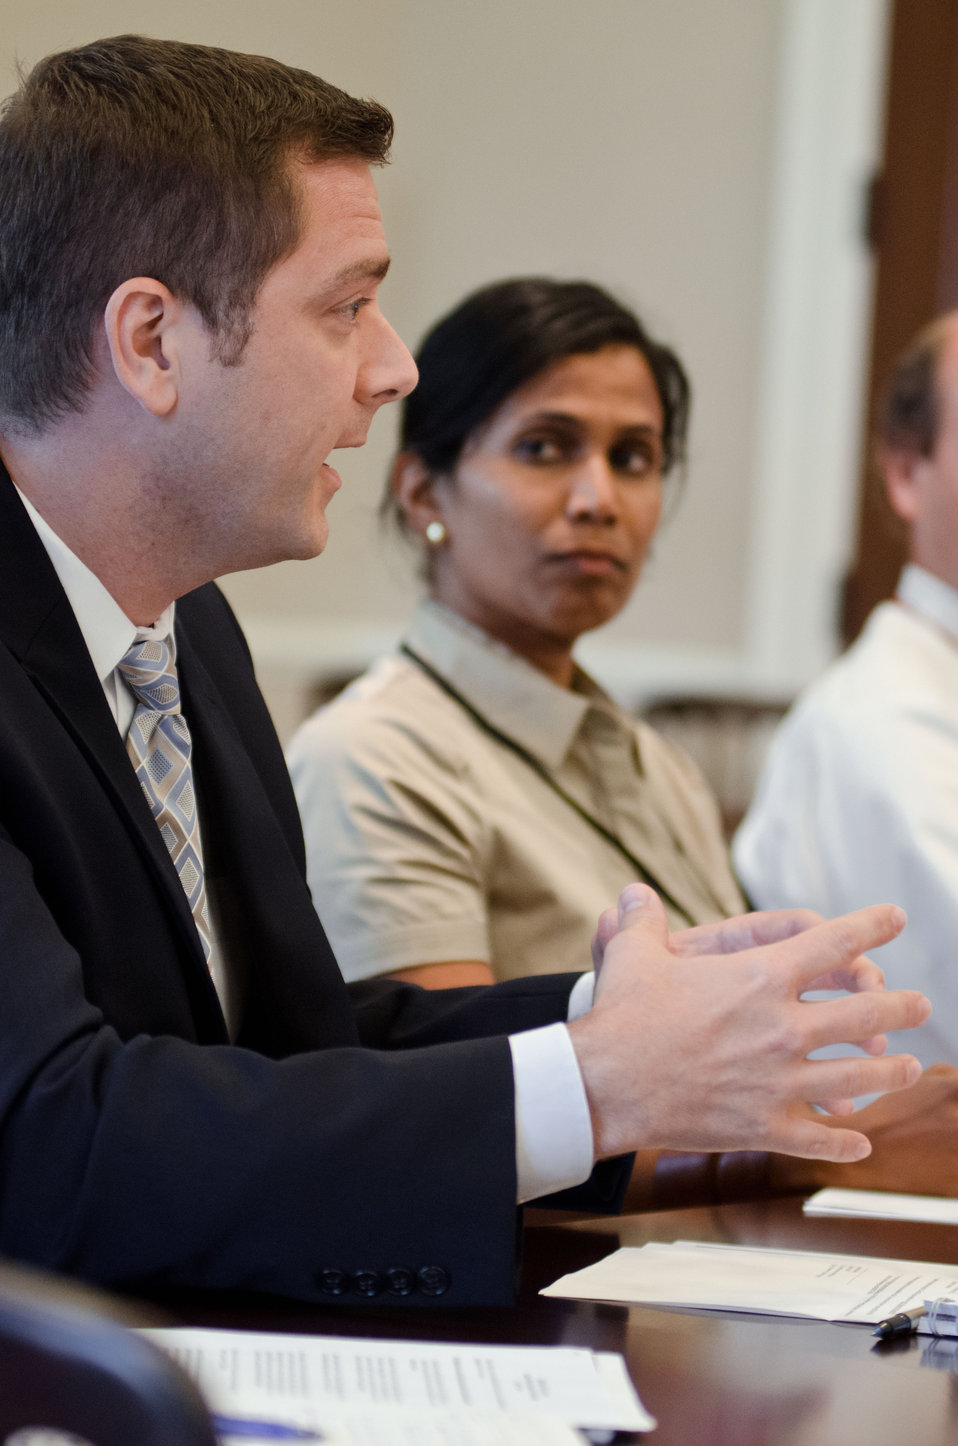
U.S. Small Business Administration Chief of Staff Jonathan Swain talks with Agriculture Secretary Tom Vilsack, during a meeting of the White House Rural Council at the Executive Office Building in Washington, D.C. on Friday, July 27, 2012 to update members and stakeholders on the Administration response to the drought and explore ways to assist American farmers and ranchers suffering in its affects. Following President Obama’s instructions of using existing programs to support struggling farmers and ranchers the U.S. Department of Agriculture (USDA) has implemented several processes to assist American farmers and ranchers. USDA has streamlined drought disaster declarations directly from Drought Monitor data, allowed nearly 30 million acres under the Conservation Reserve Program (CRP) to be used for emergency haying or grazing, lowered payment reduction for CRP lands that qualify for emergency haying and grazing in 2012, from 25% to 10%, allowed producers to modify current Environmental Quality Incentives Program (EQIP) contracts to allow for grazing, livestock watering and other conservation activities to address drought conditions, and has authorized haying and grazing of Wetlands Reserve Program (WRP) easement area in drought-affected areas where haying and grazing is consistent with conservation of wildlife habitat and wetlands, and reduced the interest rate for Farm Service Agency (FSA) Emergency loans from 3.75% to 2.25%.